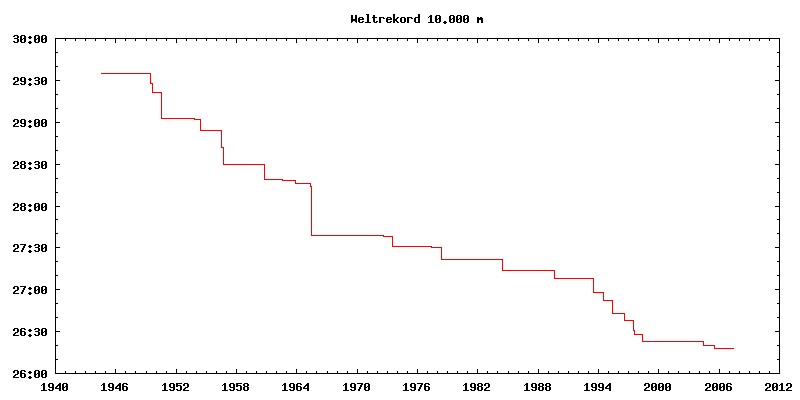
Deutsch: Verlauf der Weltrekordzeit im 10.000-Meter-Lauf